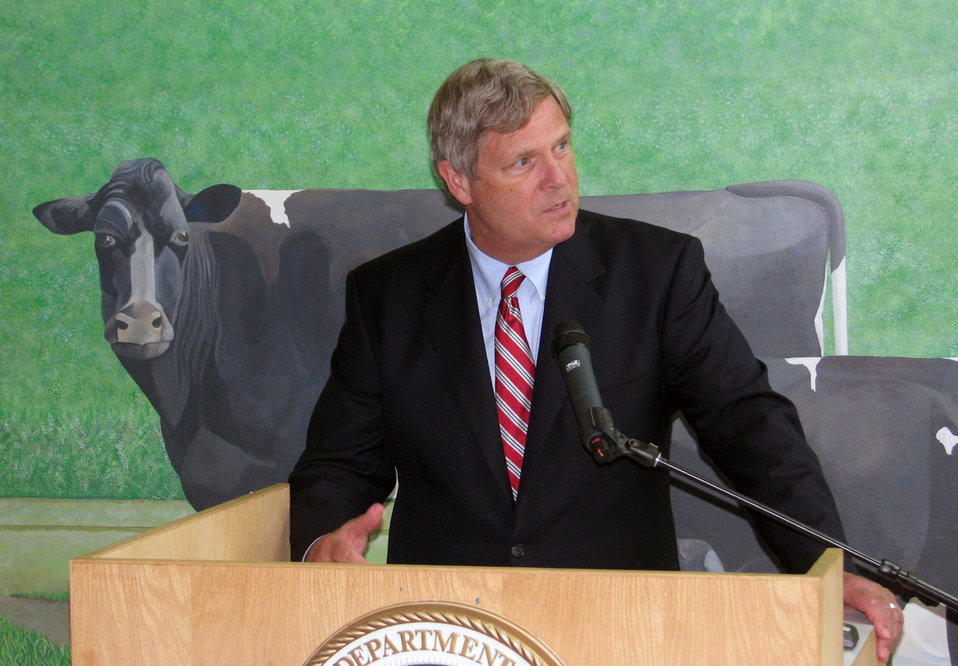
Agriculture Secretary Tom Vilsack announces the availability of funds for major research initiatives to study the weather and climatic variability on beef and dairy cattle at the University of Wisconsin in Madison, WI on Tuesday, May 7, 2013.